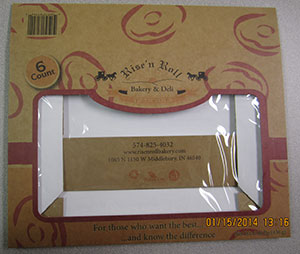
RECALLED – All Varieties of Donuts, Cinnamon Donut Holes, and Mixed Nut Candy

January 17, 2014 – Product Recall – Rise’N Roll Bakery Issues Allergy Alert on Undeclared Egg in All Their Donut Varieties and Undeclared Peanuts in Nutty Crunch.